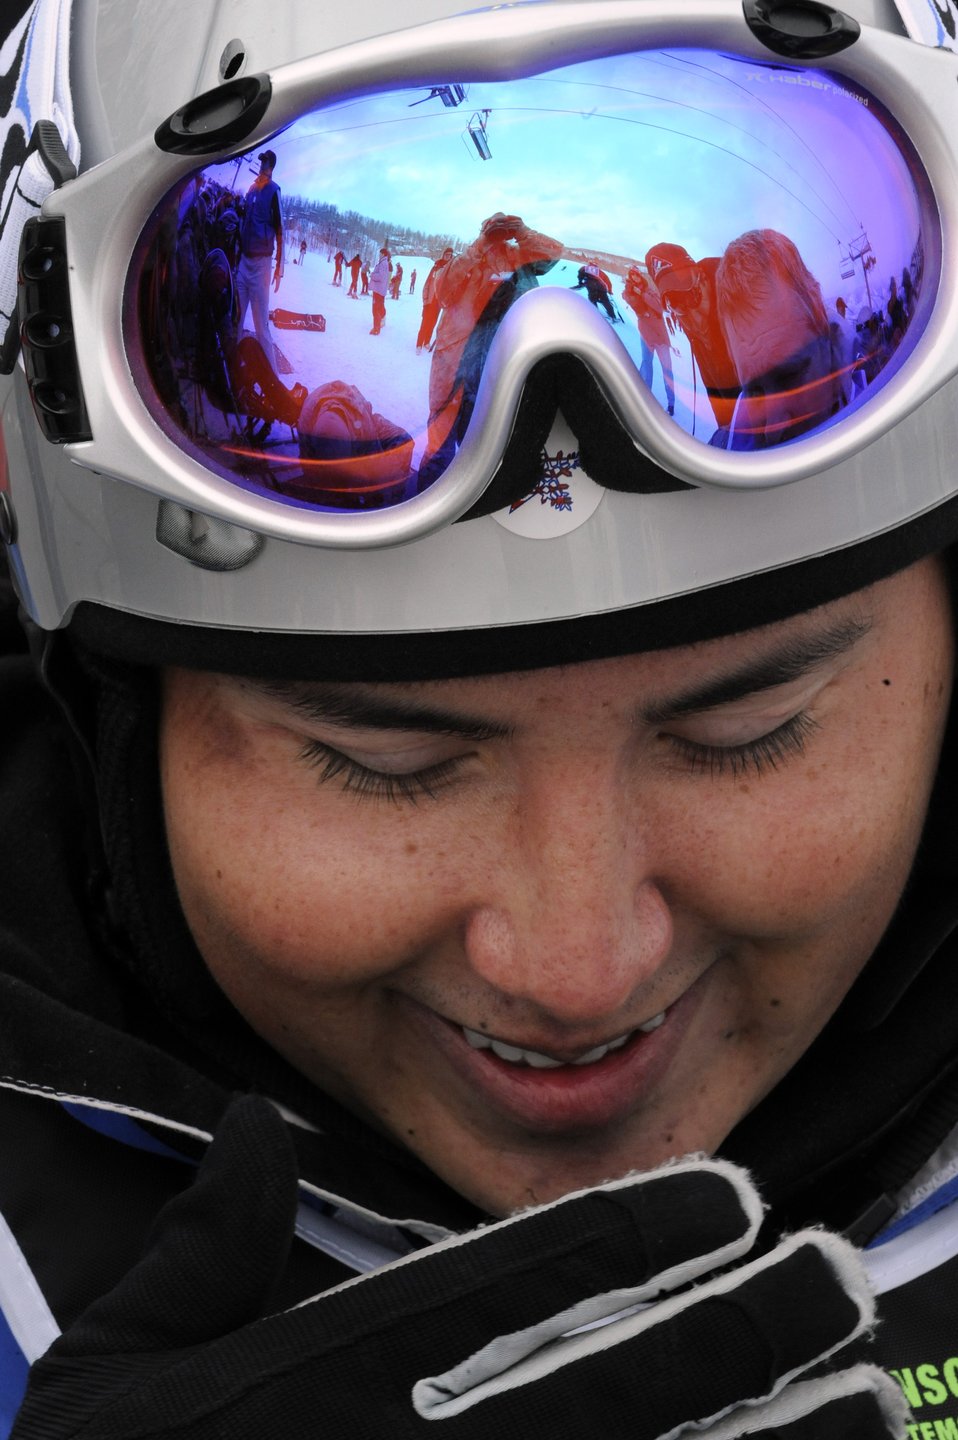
23rd National Disabled American Veterans Winter Sports Clinic

Senior Airman Kevin Krogh smiles with excitement right before he skis March 31 during the 23rd National Disabled American Veterans Winter Sports Clinic in Snowmass Village, Colo. Airman Krogh lost both legs in a major car accident in 2007 and this is his first year attending the sports clinic. Airman Krogh is assigned to Fort Sam Houston in San Antonio.